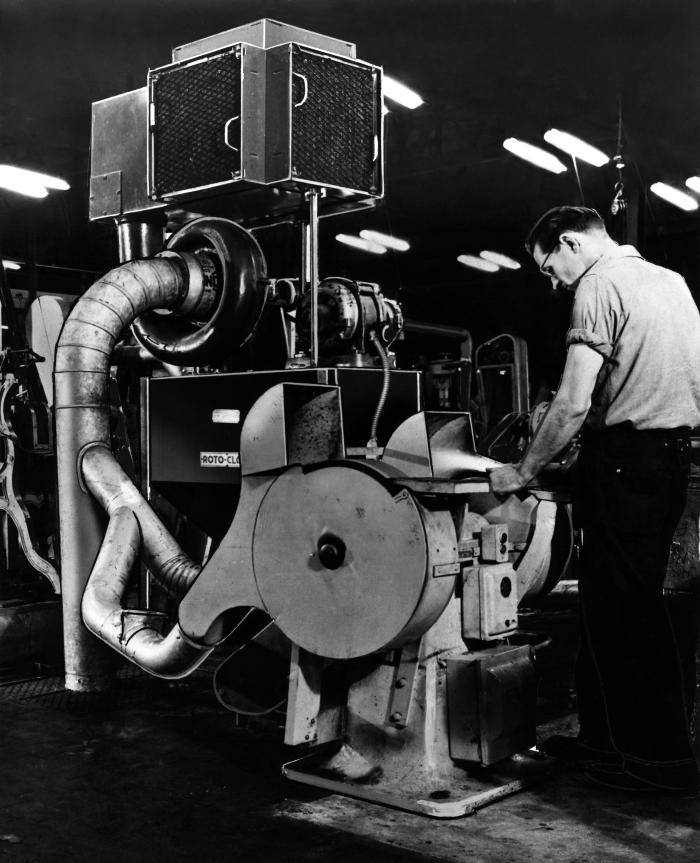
From approximately 1940, this historical photograph, which had been photo-retouched prior to printing, was provided by the Center for Disease Control's (CDC), National Institute for Occupational Safety and Health (NIOSH). The image showed a worker grinding metal on a machine that had been equipped with a Roto-Clone� ventilation device. This Louisville, Kentucky facility was part of the American Air Filter Company. In the 1940s and 1950s, the Industrial Hygiene Division (IHD) investigated hazards associated with activities such as metal grinding. It was in scenarios such as this where there existed the potential for worker health problems associated with industrial metal grinding, including respiratory and dermatologic hazards from inhalation and contact with fungi- and bacteria-contaminated synthetic metal-working fluids, oil mists, and grinding dust in the machining areas.